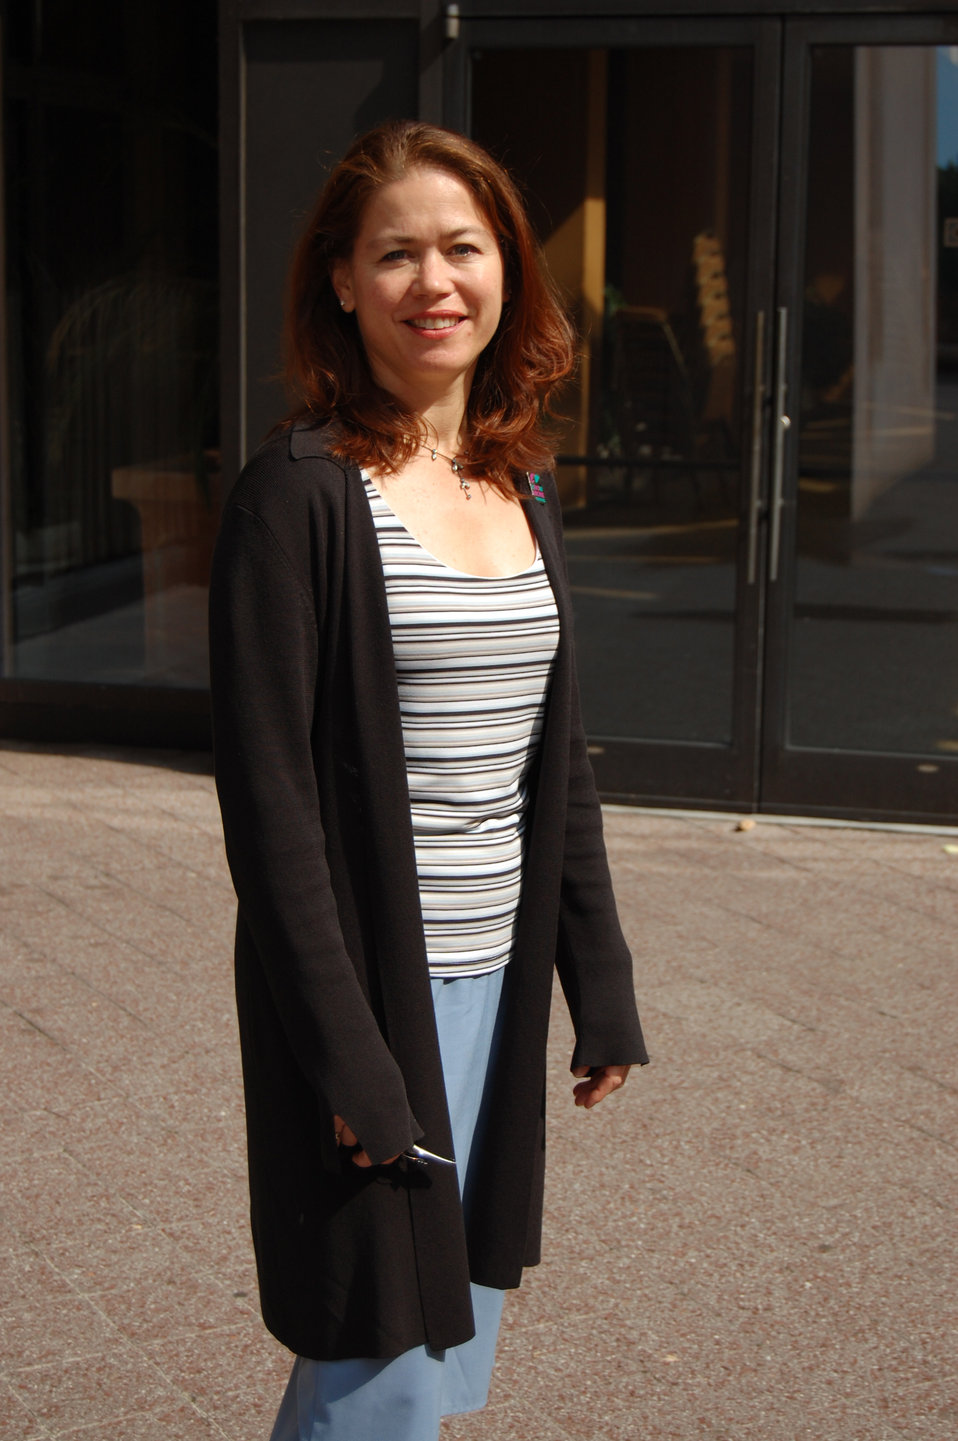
PACHA conf048